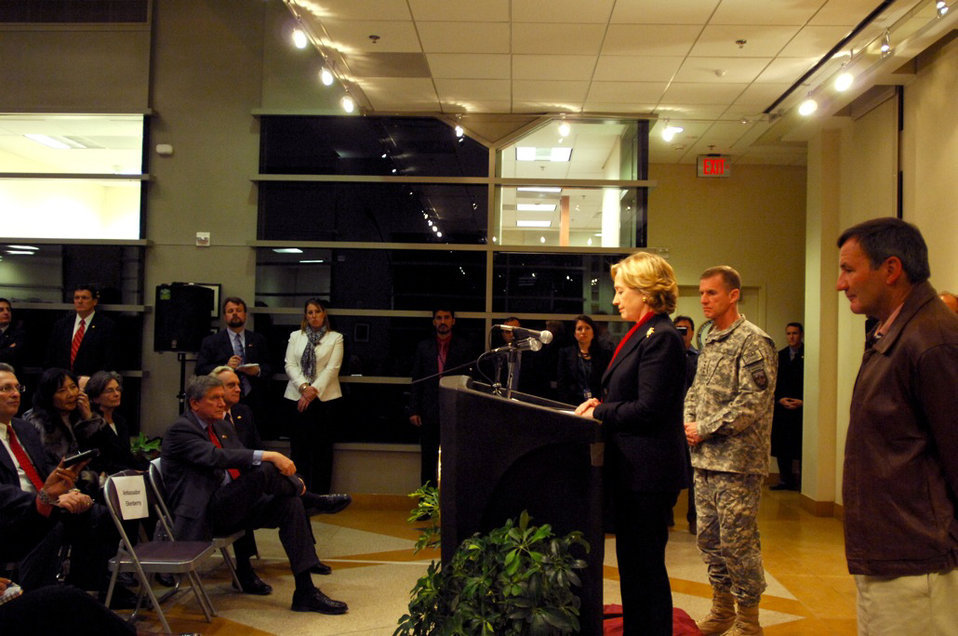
Secretary Clinton Travels to Afghanistan

U.S. Secretary of State Hillary Rodham Clinton holds a press conference at the U.S. Embassy in Kabul, Afghanistan November 19, 2009. Secretary Clinton traveled to Afghanistan to attend President Hamid Karzai's November 19, 2009 inauguration ceremony, meet with Afghanistan's leadership, international partners and allies, U.S. troops, staff in Provincial Reconstruction Teams, and Embassy staff.